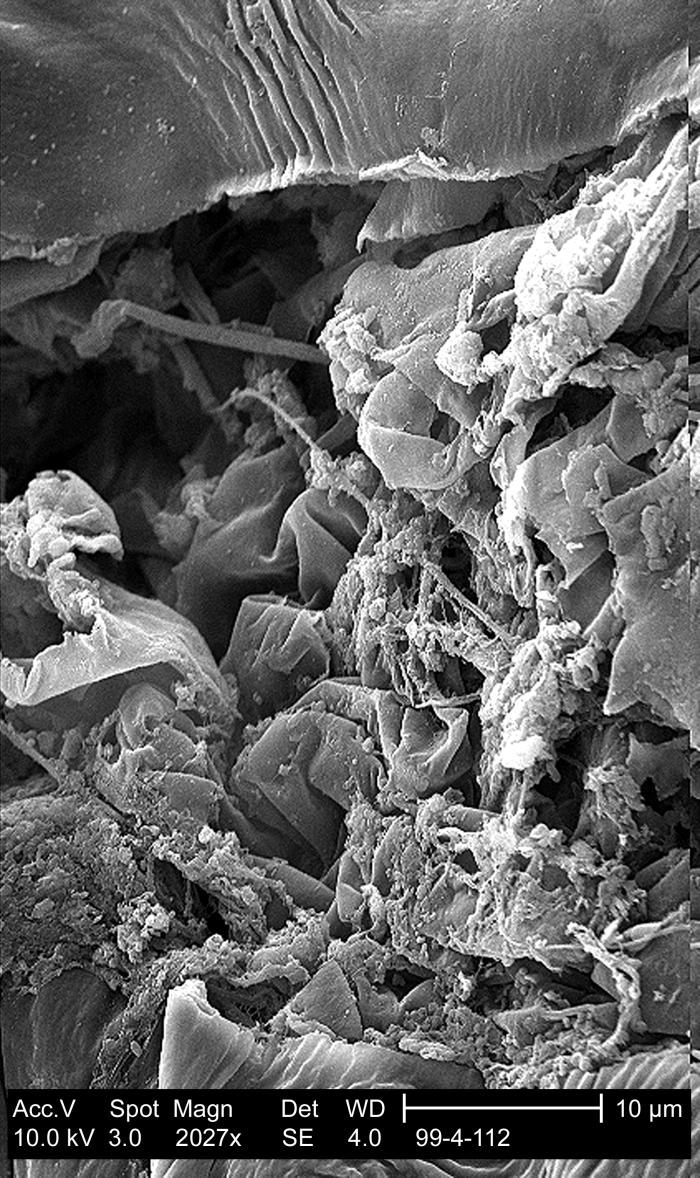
This scanning electron micrograph (SEM) reveals the textured surface at the injury site on a leaf of cut parsley; Mag.-2027x.